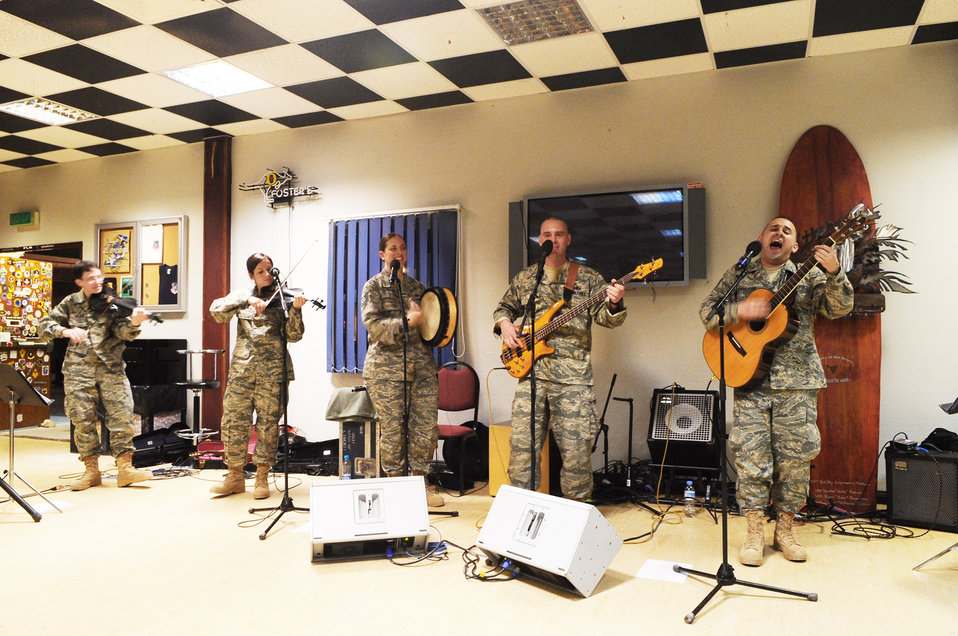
'Celtic Aire' performs in Southwest Asia

Vocalist Tech. Sgt. Joseph Haughton (right) belts out a tune during a performance with